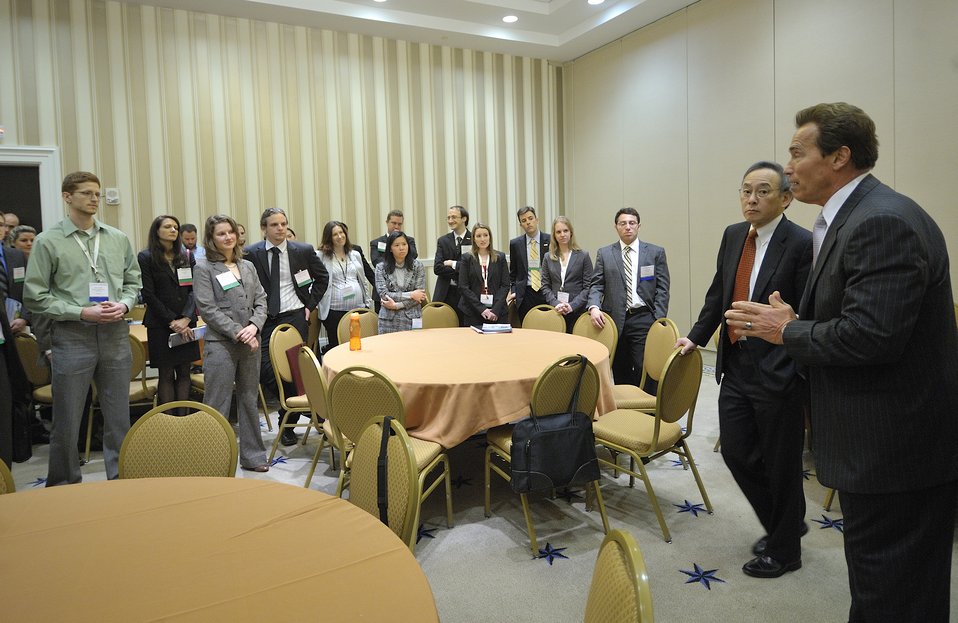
ARPA-E Energy Innovation Summit 2011, 10 of 83

Steven Chu, Secretary, United States Department of Energy and Arnold Schwarzenegger, Former Governor of California surprise graduate students who traveled to the summit.